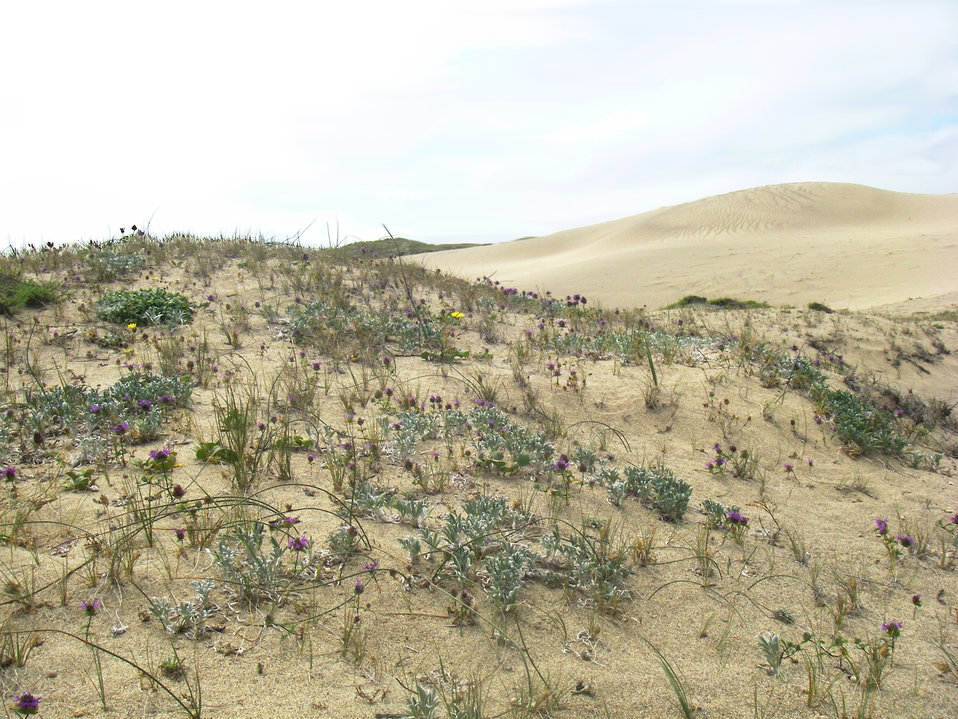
Hillside at Pt. Reyes, California of tidestroms lupine with monardella